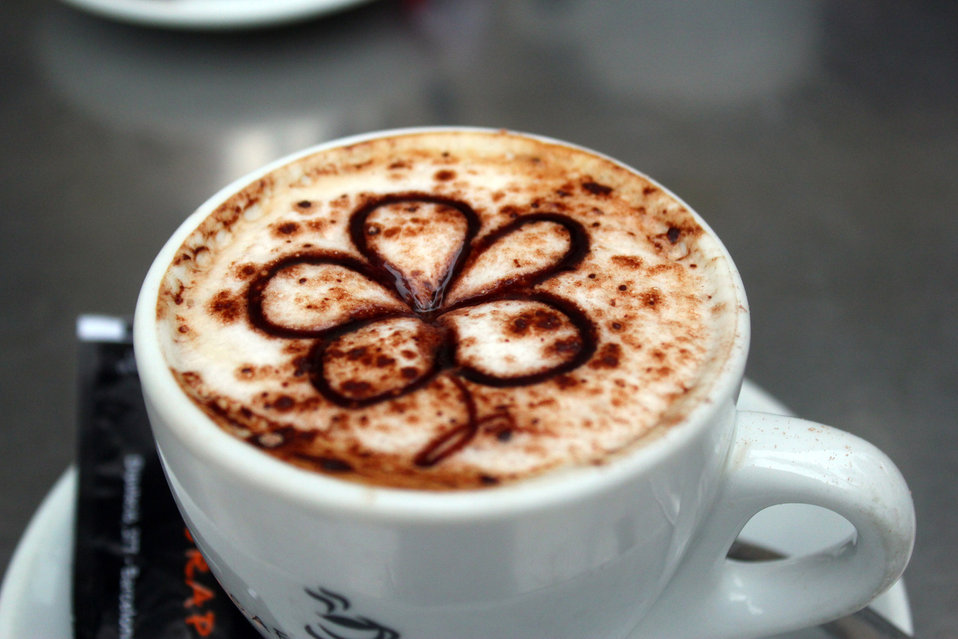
Spring coffee time

A cup of cappuccino coffee with a flower.